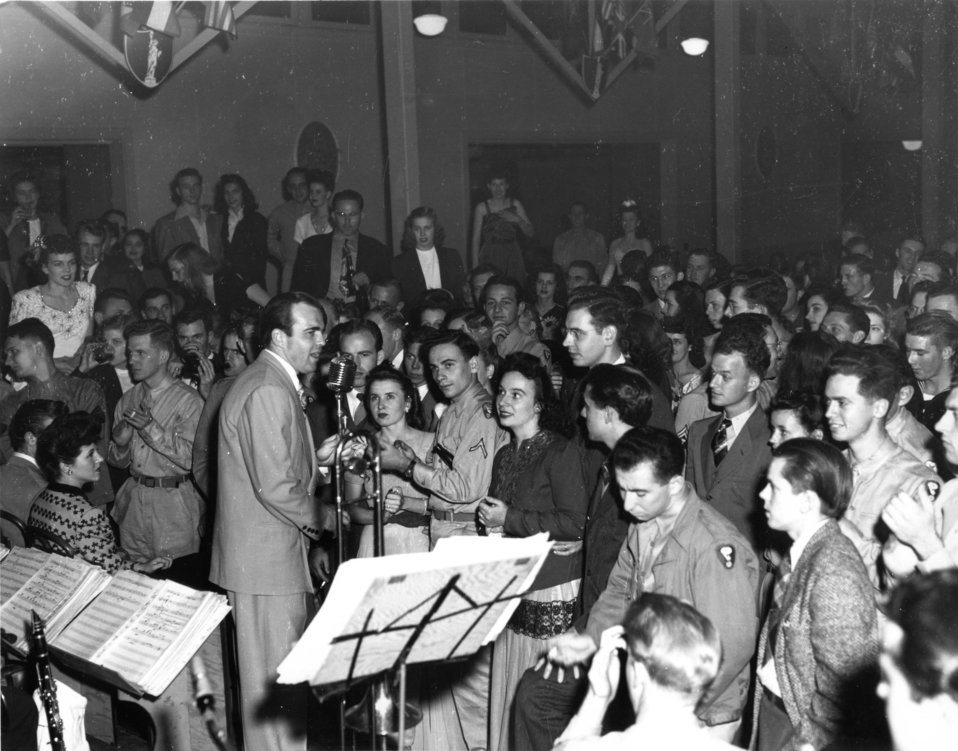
Recreation at Oak Ridge